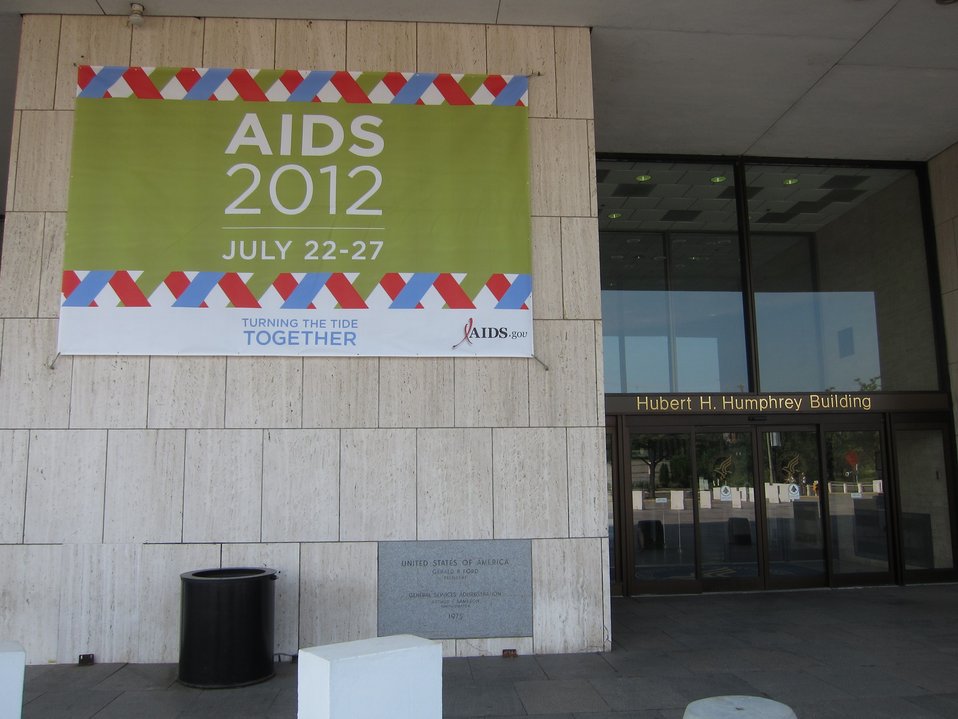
hhs-aids2012-07-17-12

AIDS 2012 Banner at HHS Headquarters